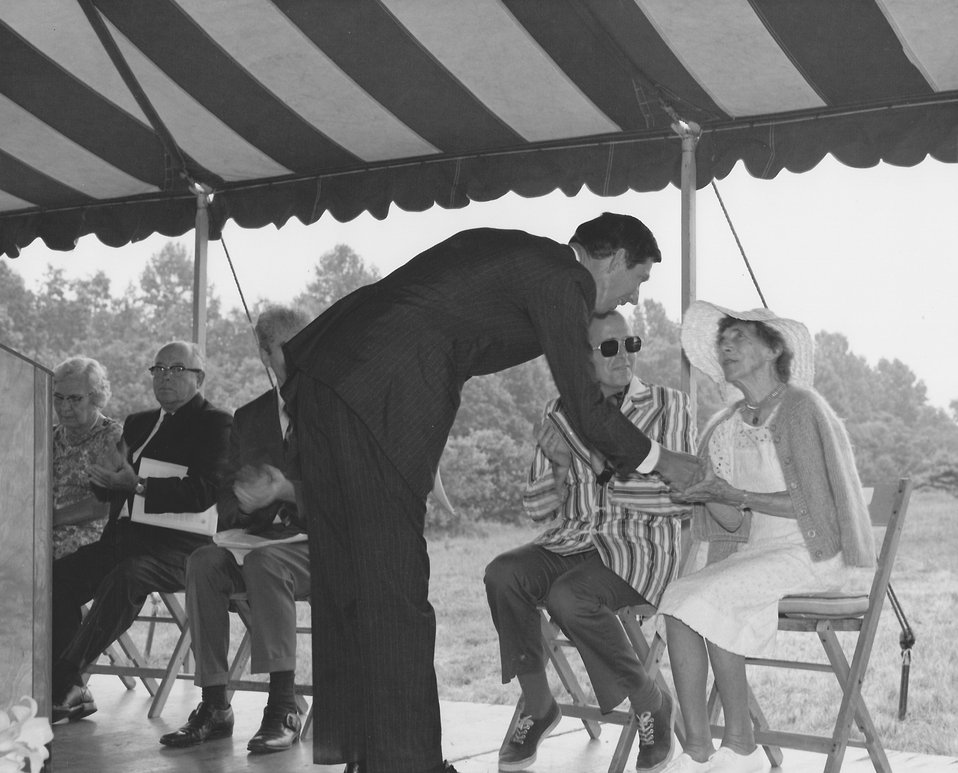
Donation of Salt Meadow

Asst Secretary of the Interior Nathaniel P. Reed accepts the donation of Salt Meadow (now part of McKinney National Wildife Refuge) from Esther Lape, 1972